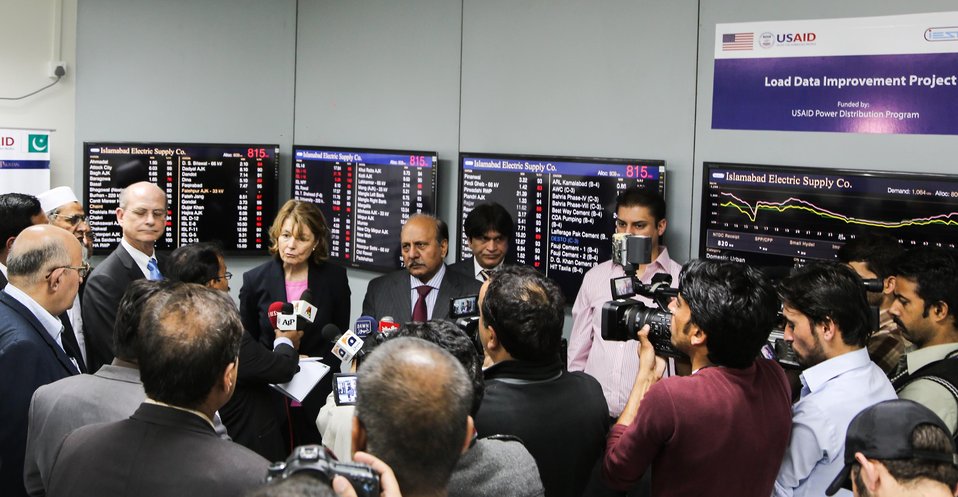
U.S. Improves IESCO’s ability to Reduce Unscheduled Load Shedding

Nancy Estes, Acting Mission Director, United States Agency for International Development (USAID), and Yousaf Awan, Chief Executive Officer, Islamabad Electric Supply Company (IESCO), briefing the media.